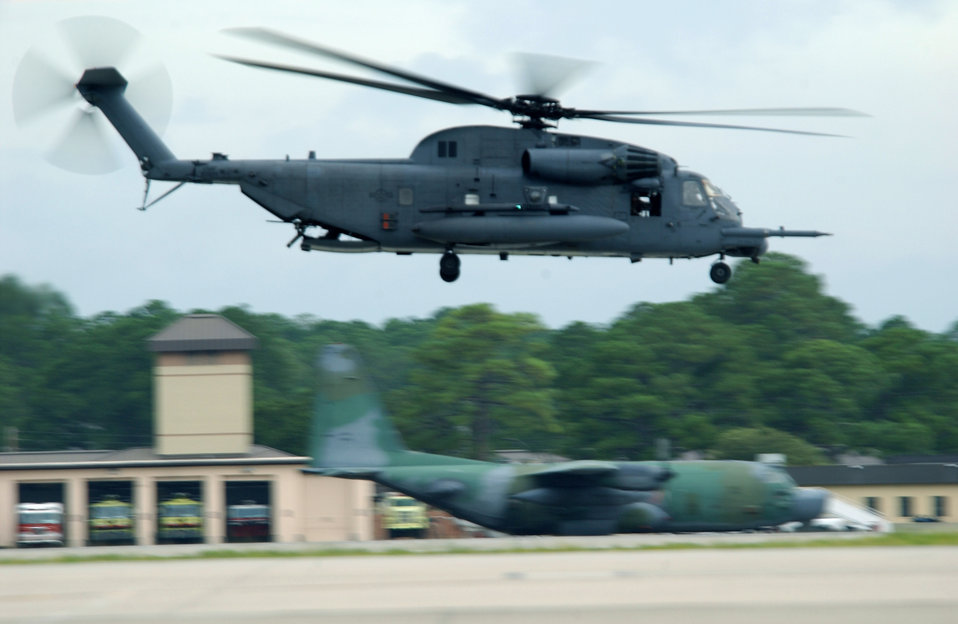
Outrunning Ivan

HURLBURT FIELD, Fla. -- An MH-53 Pave Low helicopter takes off while an MC-130H Combat Talon II taxis in the background. The aircraft are evacuated because of Hurricane Ivan.